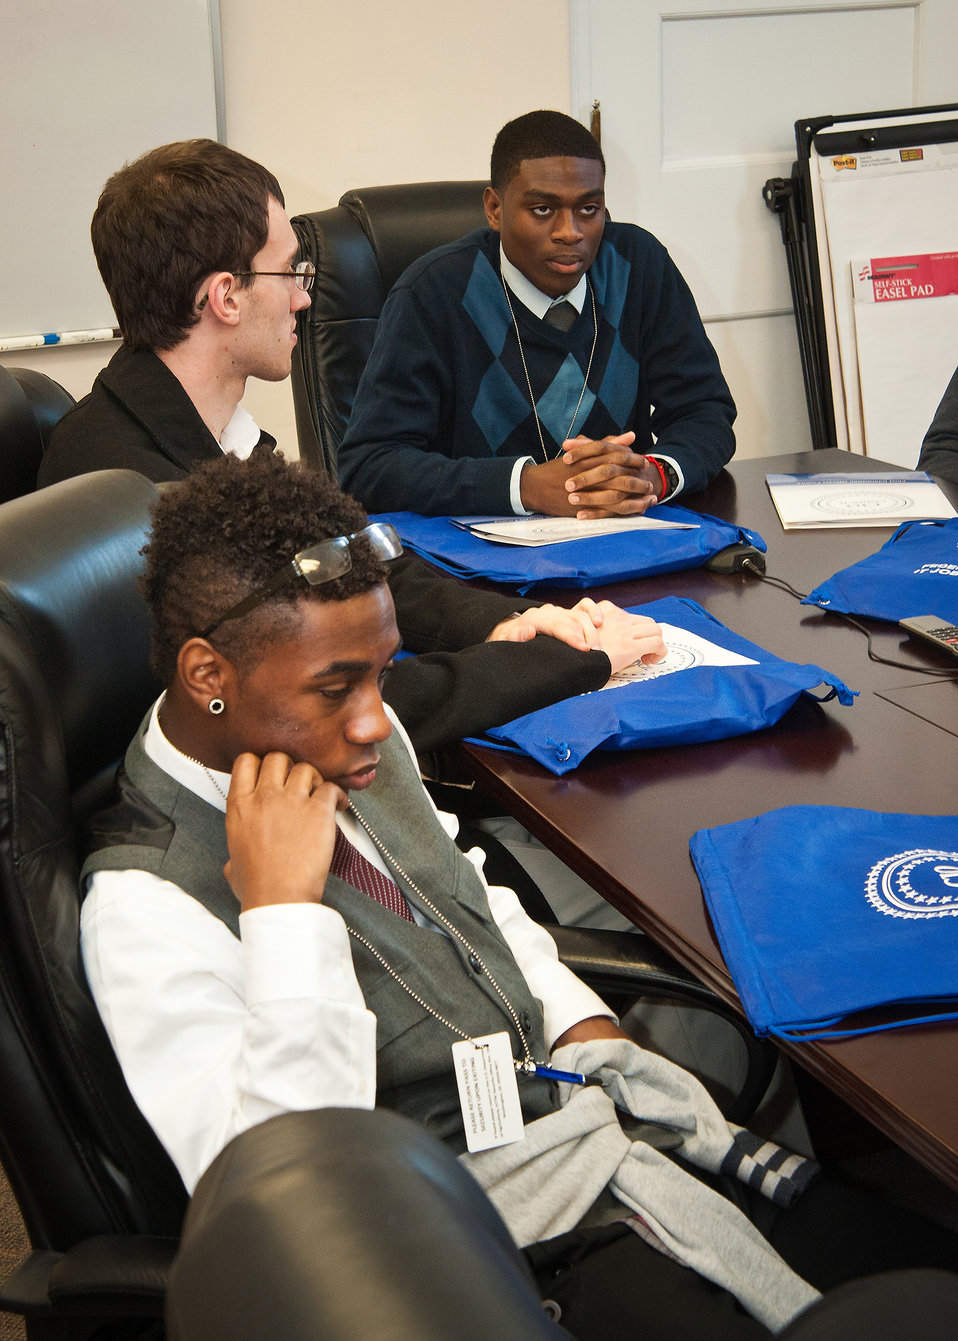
Edison Academy, Fairfax, VA student Albert Ankrah listens to U.S. Department of Agriculture (USDA) Office of Chief Information Officer (OCIO) Technology, Planning, Architecture and E-Gov Associate Chief Flip Anderson explain the depth and breadth of the information technology services during the annual USDA Information Technology (IT) Job Shadow Day held by the OCIO to introduce local high school students to careers in information technology in Washington, D.C. on Tuesday, Apr. 2, 2013.